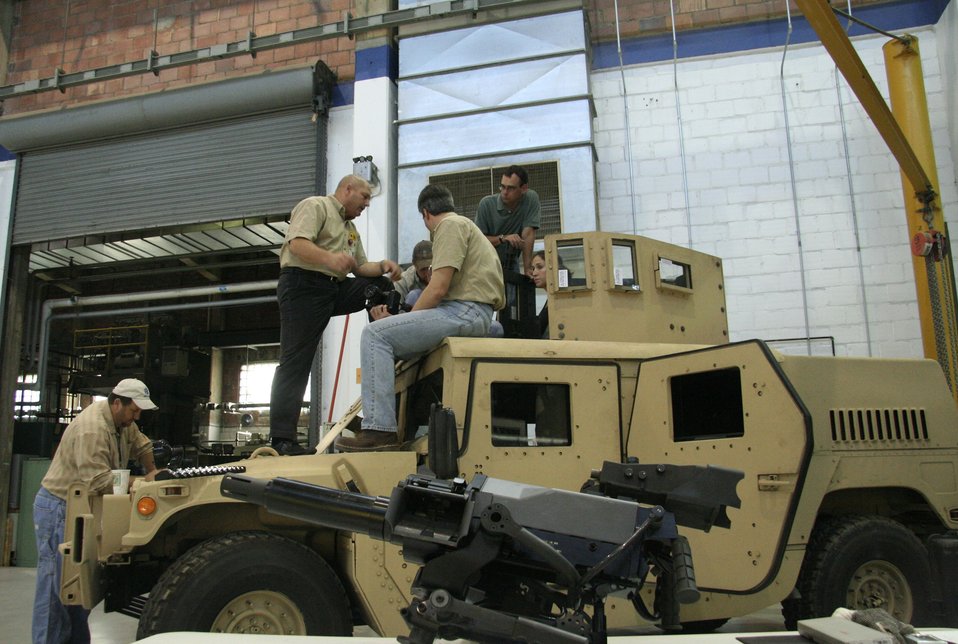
2007 Baldrige Award, U.S. Army Armament Research, Development and Engineering Center (ARDEC)

2007 Malcolm Baldrige National Quality Award, Nonprofit, Recipient Profile